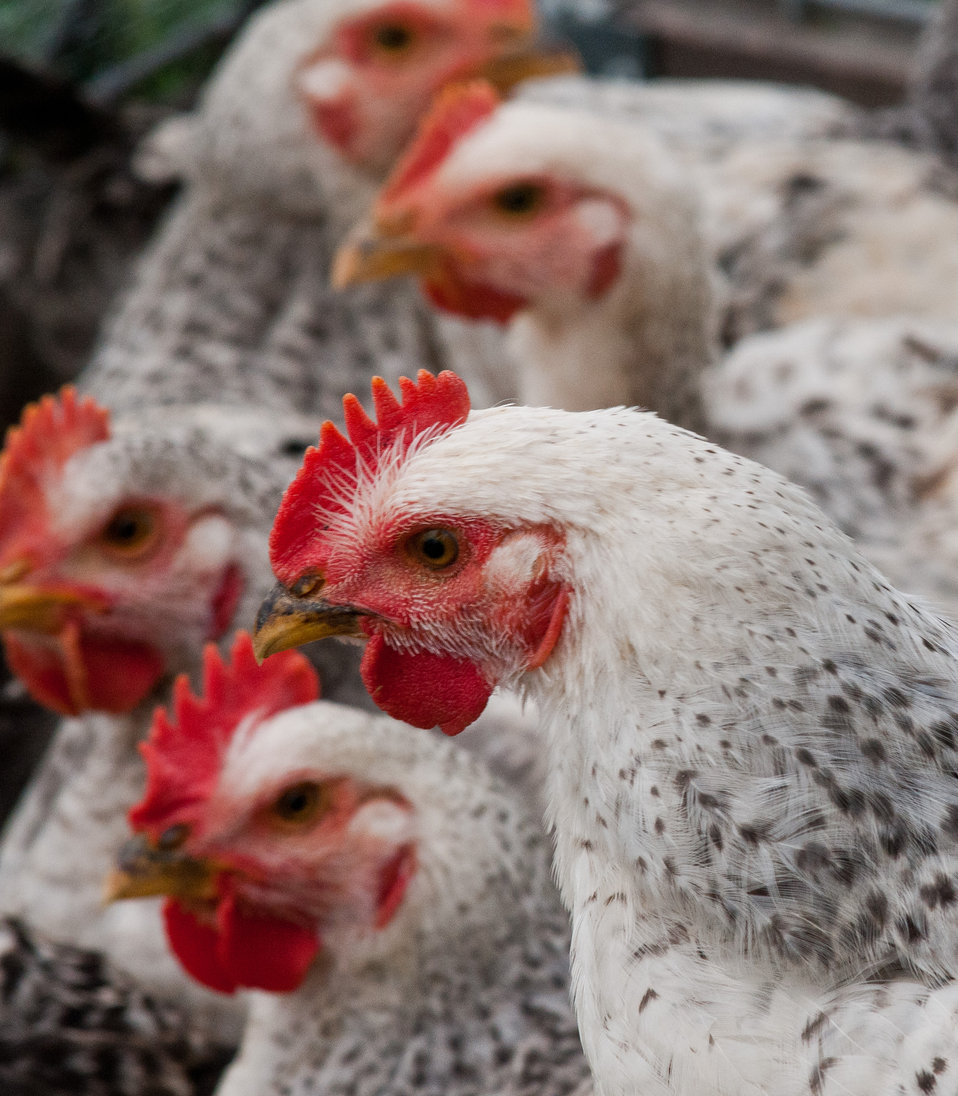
Broiler chickens graze on organic pastures and live in pens that protect them from predators, direct sun light, and wind at Nick’s Organic Farm, owned by Nick Maravell in Adamstown, MD on Friday, July 12, 2013. The enclosures are light enough to be moved by hand, each day, one consecutive section at a time. This allows the pasture to easily recover from the grazing. The farm produces Black Angus beef, chicken, turkey, eggs, hay, soybeans, corn, alfalfa, orchard grass, rye; and other crops. The cattle are100% grass-fed receiving certified organic pasture, certified organic hay (in winter), water and mineral salts mixed with sea kelp. The cattle are not fed hormones, antibiotics or animal products. Poultry feed from grain is ground from organic grain. The poultry also graze on organic pastures. The farm has conducted on-farm research with federal, state and non-profit agencies to refine organic practices. An organization such as the U.S. Department of Agriculture (USDA) Agricultural Research Service (ARS) center in Beltsville has been able to conduct research to improve organic crops and to breed and manage the cattle so that they have.